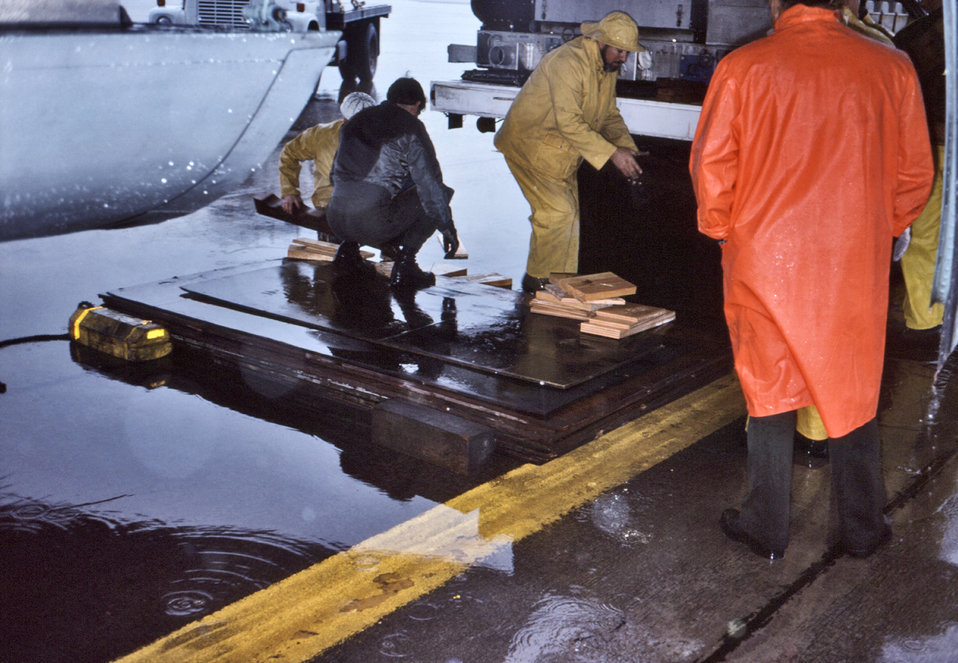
This 1976 photograph showed several loadmasters, as they were loading the CDC's mobile quarantine facility (MQF), into an aircraft to be transported to Atlanta, Georgia.